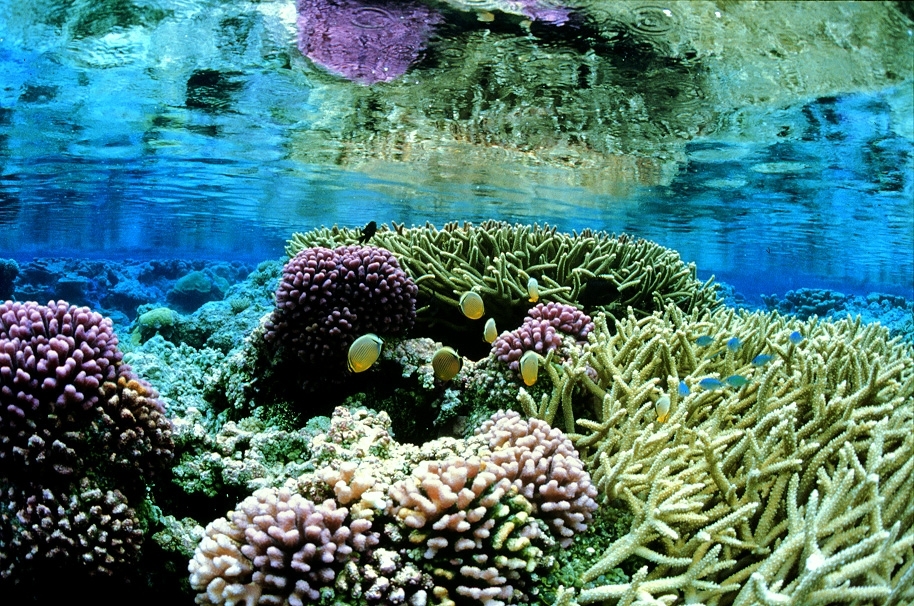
Coral gardens at Palmyra Atoll NWR

The pink coral gardens of Palmyra Atoll National Wildlife Refuge in the Pacific abound with tropical fish.